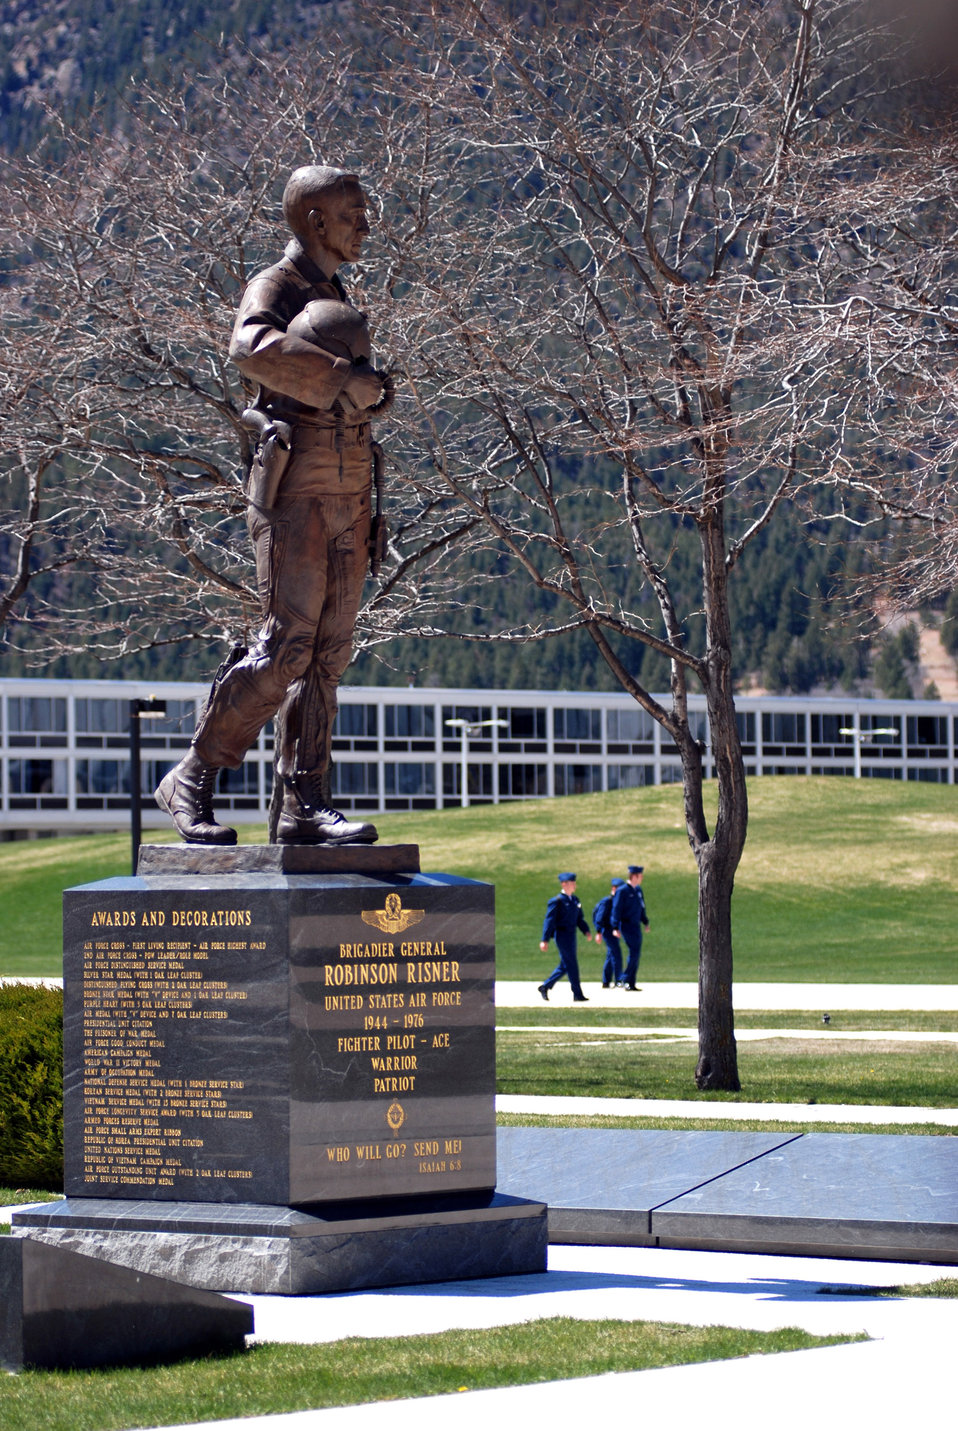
Life at the academy

U.S. Air Force Academy cadets walk on the Terrazzo passing the 9-foot-tall statue of retired Brig. Gen. Robinson Risner in April at the academy. The statue was dedicated Nov 16, 2001, to honor General Risner and all prisoners of war. The statue was built 9-feet tall because, while a POW at the